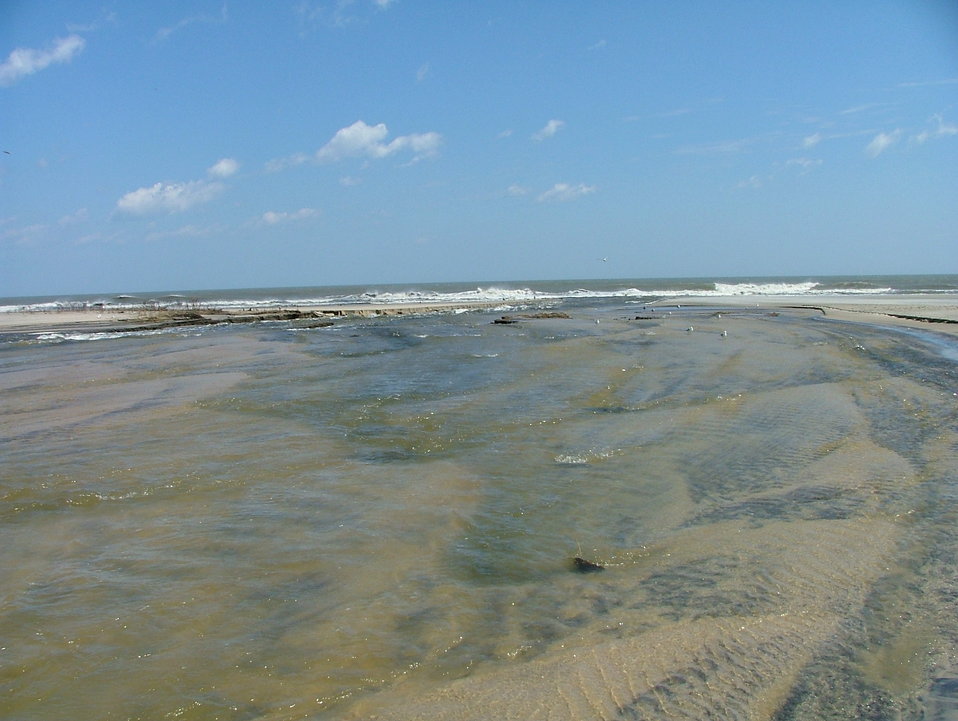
Breach at Swans Cove

Breach caused by Hurricane Irene at Swans Cove at Chincoteague National Wildlife Refuge in Virginia.